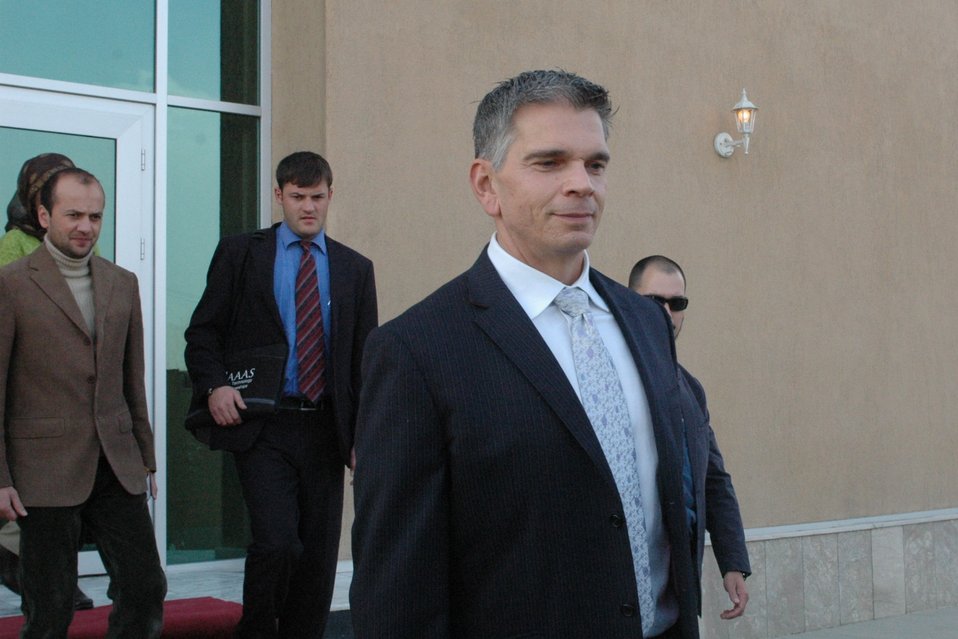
Community Based Stabilization Grants Ceremony, December 7, 2010